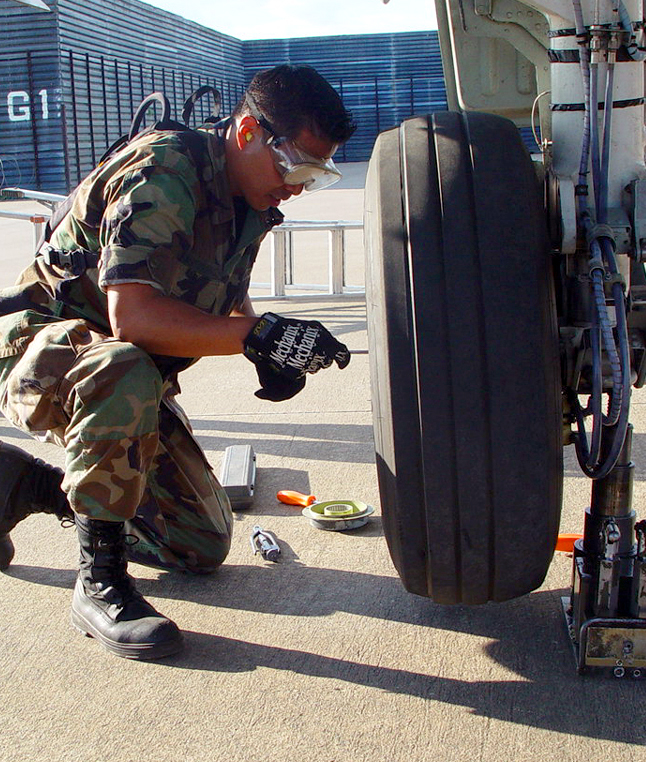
The mission continues

SUWON AIR BASE, South Korea - Airman 1st Class Rodney Transfiguracion changes a tire on an A-10 Thunderbolt II. Maintainers, pilots, weapons specialists, security forces, and medical and services airmen from Osan Air Base, South Korea, are working here while Osan's runway is closed for repairs. Transfiguracion is assigned to the 51st Aircraft Maintenance Squadron.